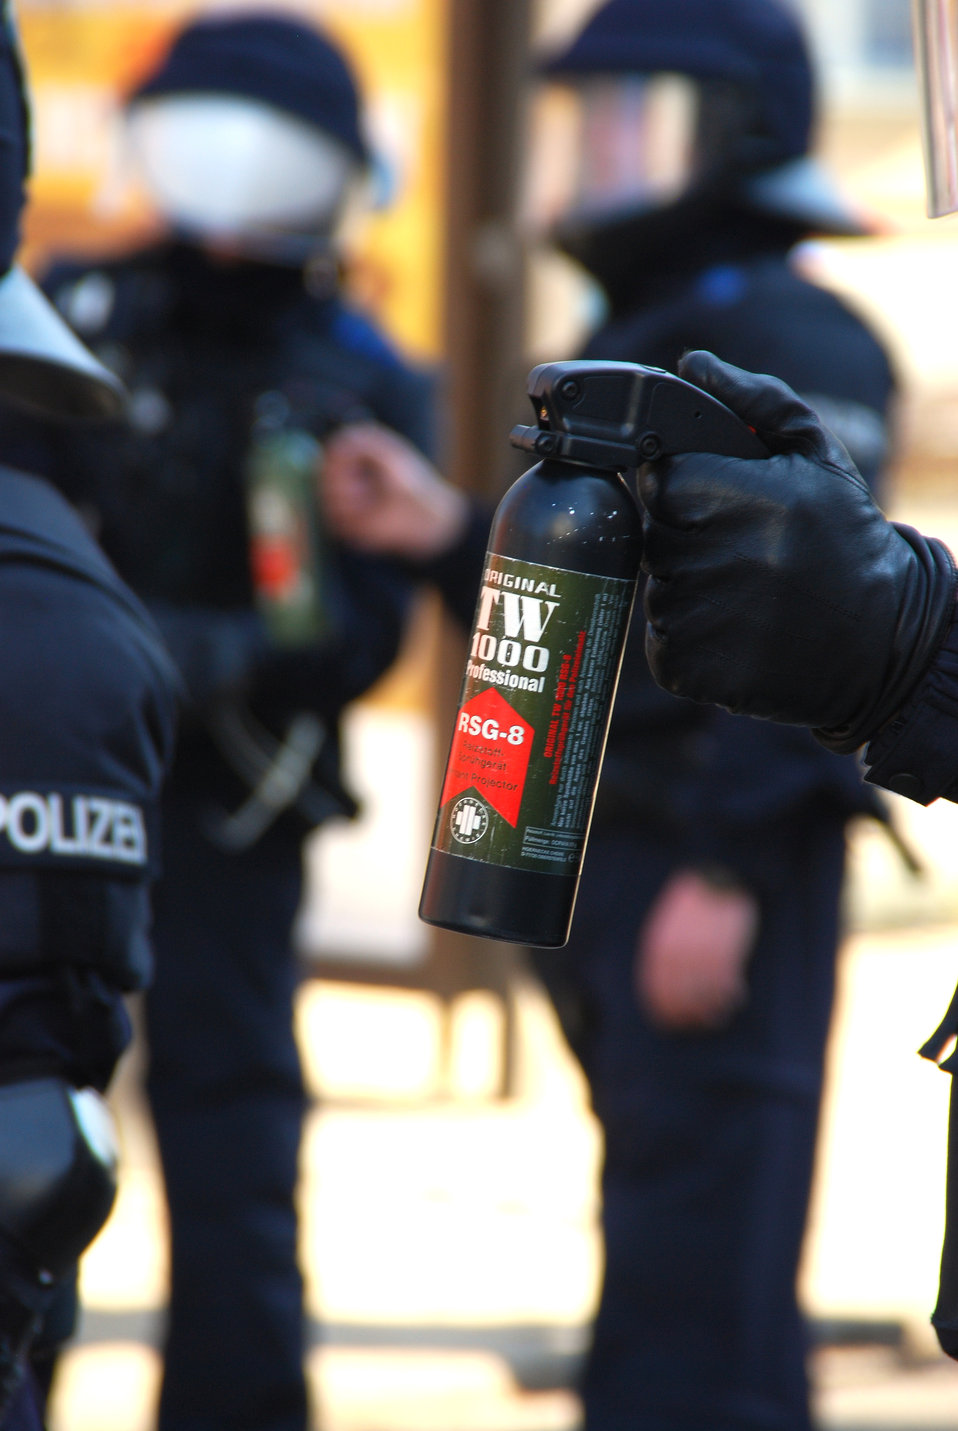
Deutsch: Proteste gegen den Nazi-Aufmarsch am 24.3.2012 in Frankfurt (Oder). Reizstoffsprühgerät RSG-8